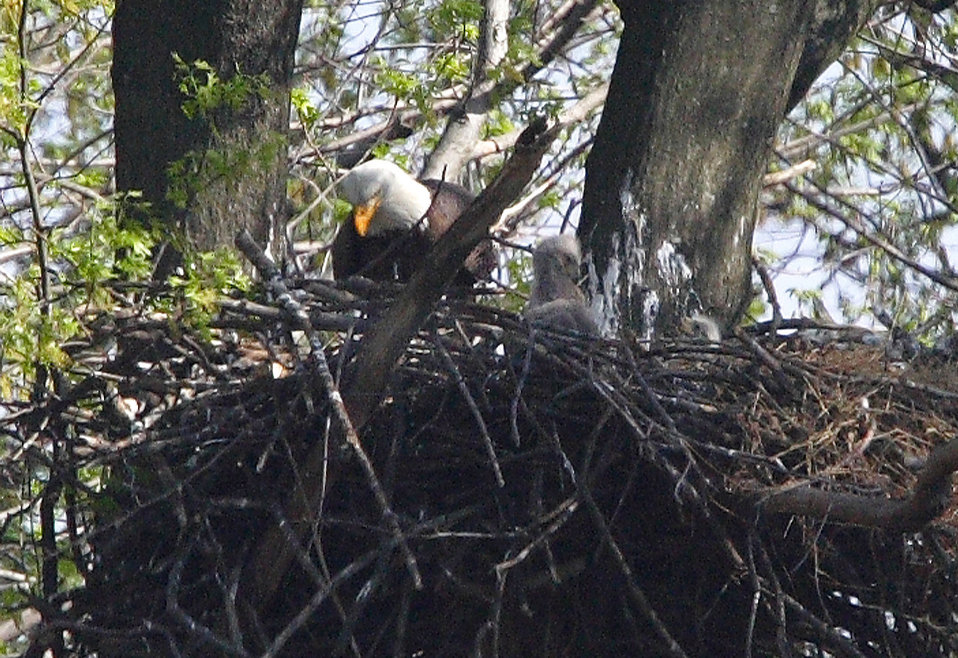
Bald eagle with young at John Heinz National Wildlife Refuge

Bald eagle female and two eaglets at John Heinz National Wildlife Refuge in Philadelphia, PA.

Bald eagles have successfully nested and hatched two chicks at John Heinz National Wildlife Refuge for the first time in the history of the refuge!